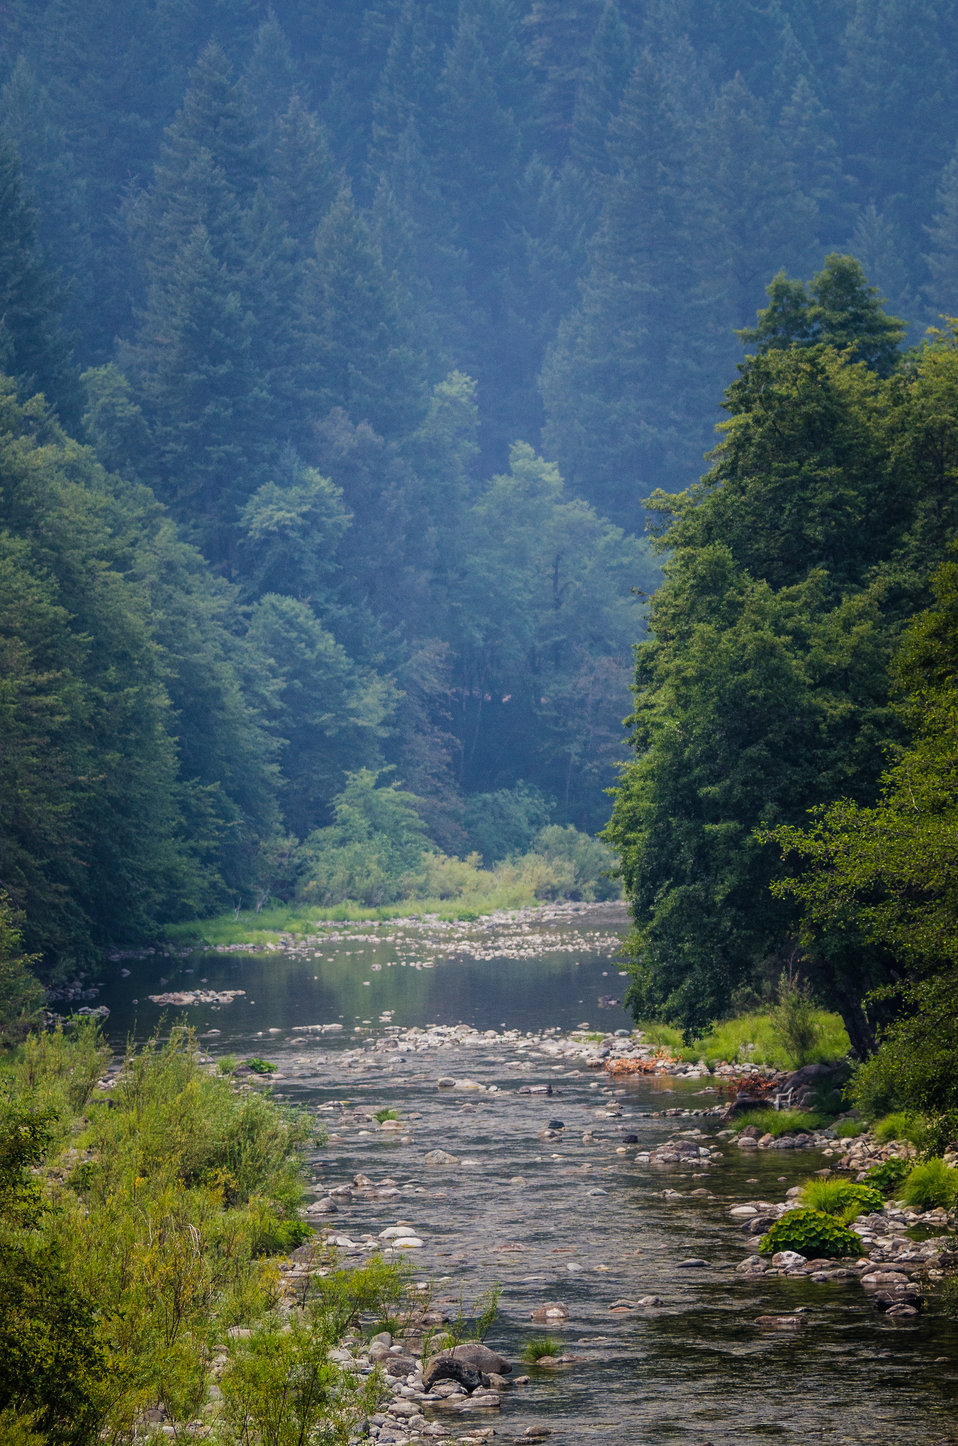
The clear waters of the North Fork Salmon River runs along the south side of Sawyers Bar (right), in Klamath National Forest, Calif., where the Salmon River Complex Wildlands Fire burns miles away to the northwest and west of Etna and Yreka, CA, on Tuesday, Aug. 6, 2013.